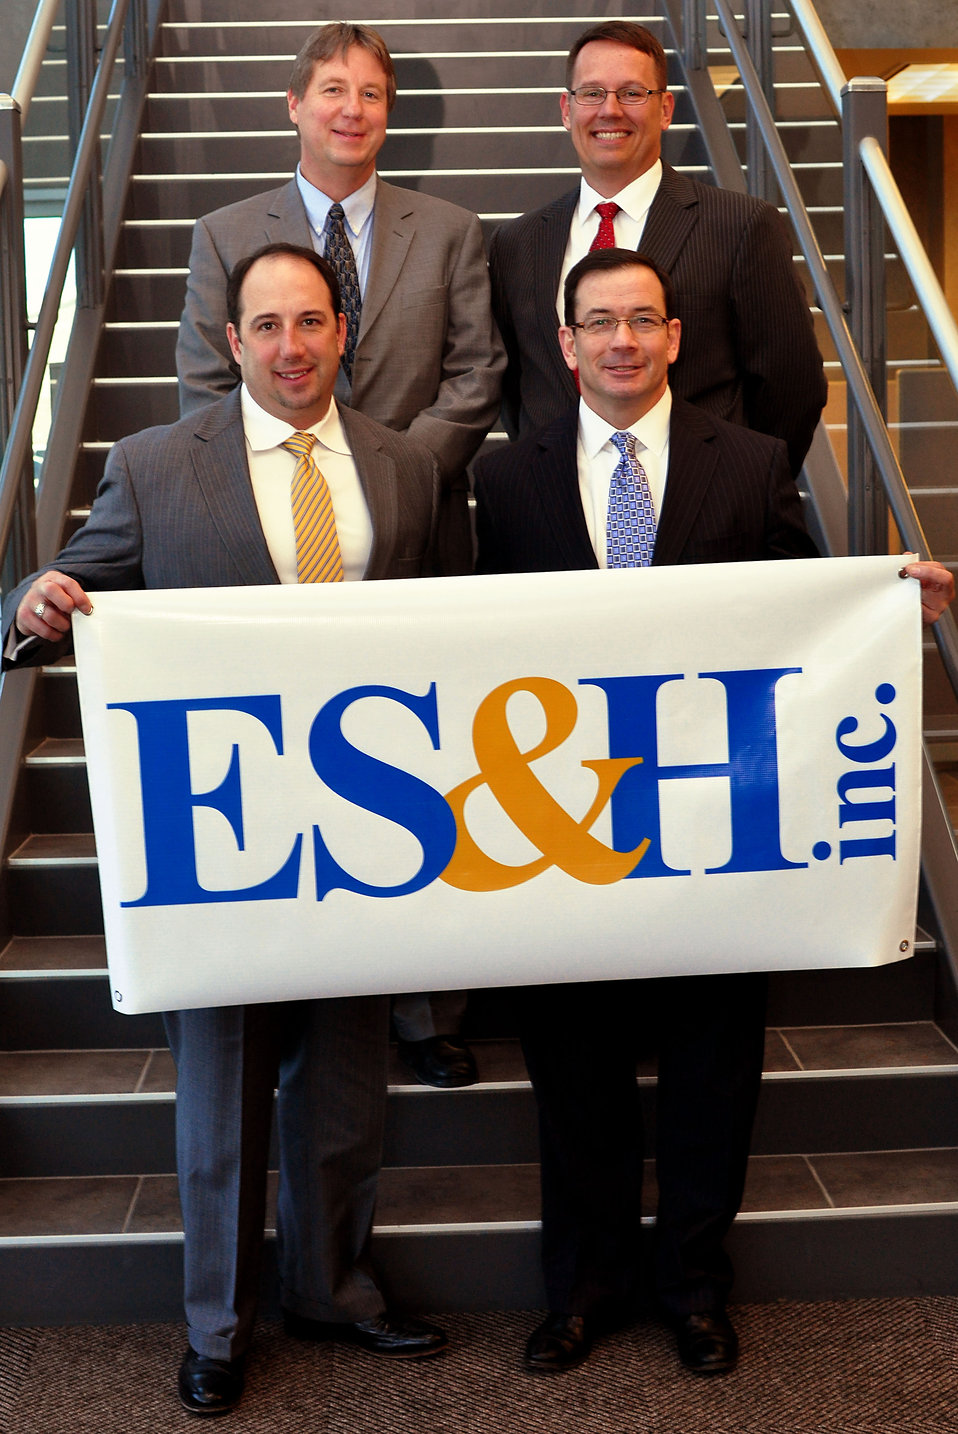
ES and H Team Oak Ridge